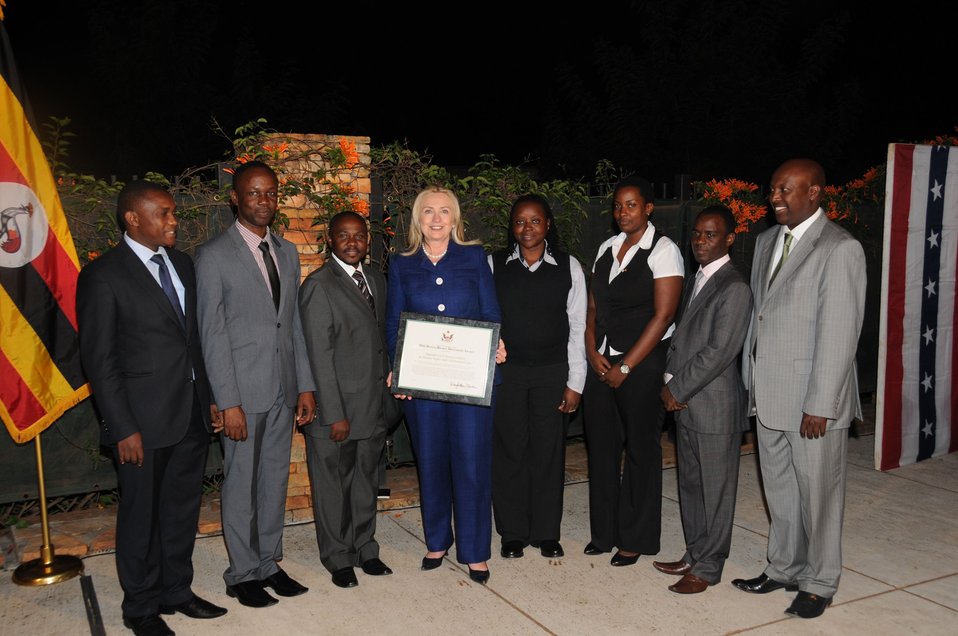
Secretary Clinton Poses With 2011 Human Rights Defender Award Recipients

U.S. Secretary of State Hillary Rodham Clinton poses for a photo with recipients of the U.S. State Department’s 2011 Human Rights Defender Award including Adrian Jjuuko, Geoffrey Ogwaro, Julius Kaggwa, Joanita Warry Nambirige, Clare Byarugaba, Frank Mugisha, and Hassan Shire Sheikh in Kampala, Uganda on August 3, 2012.